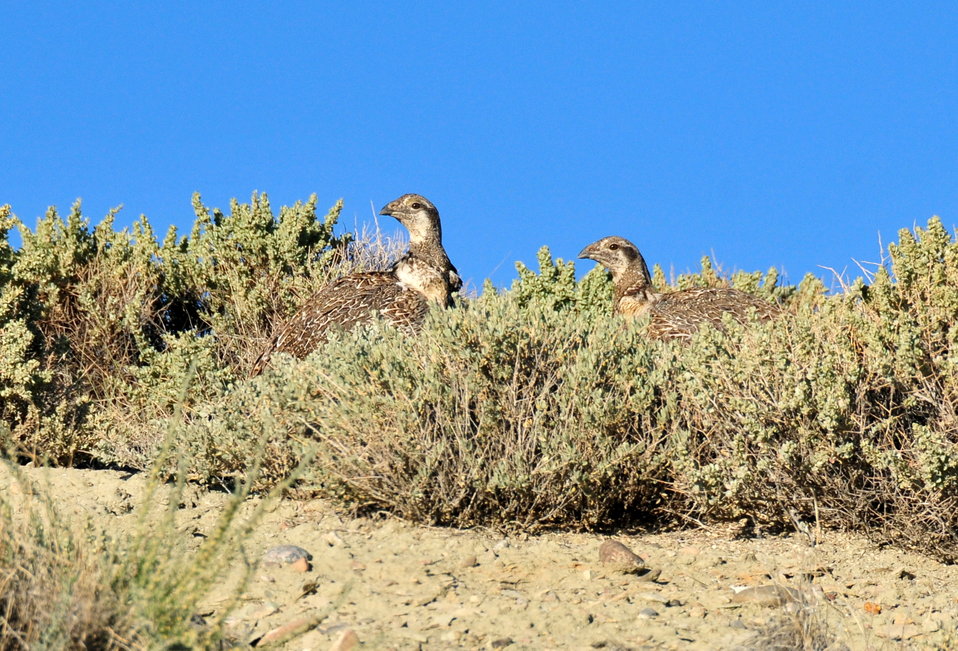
Sage-grouse in Sagebrush on Seedskadee NWR

Two male sage grouse catch the early morning sun on a ridge at Seedskadee National Wildlife Refuge.